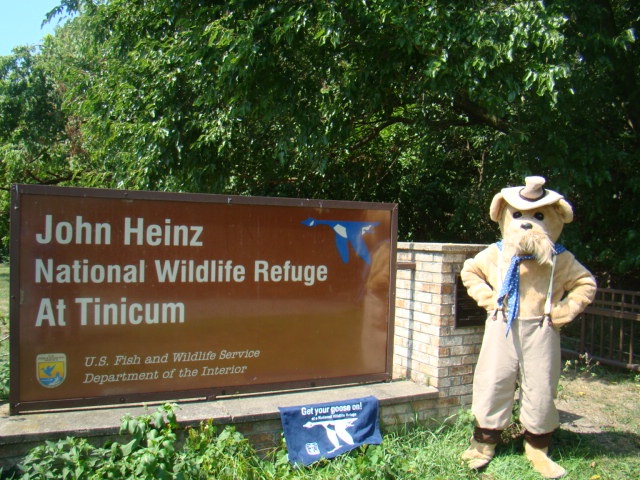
Get Your Goose On!

TR Bear (Tajuan Levy) poses in front of Heinz entrance.